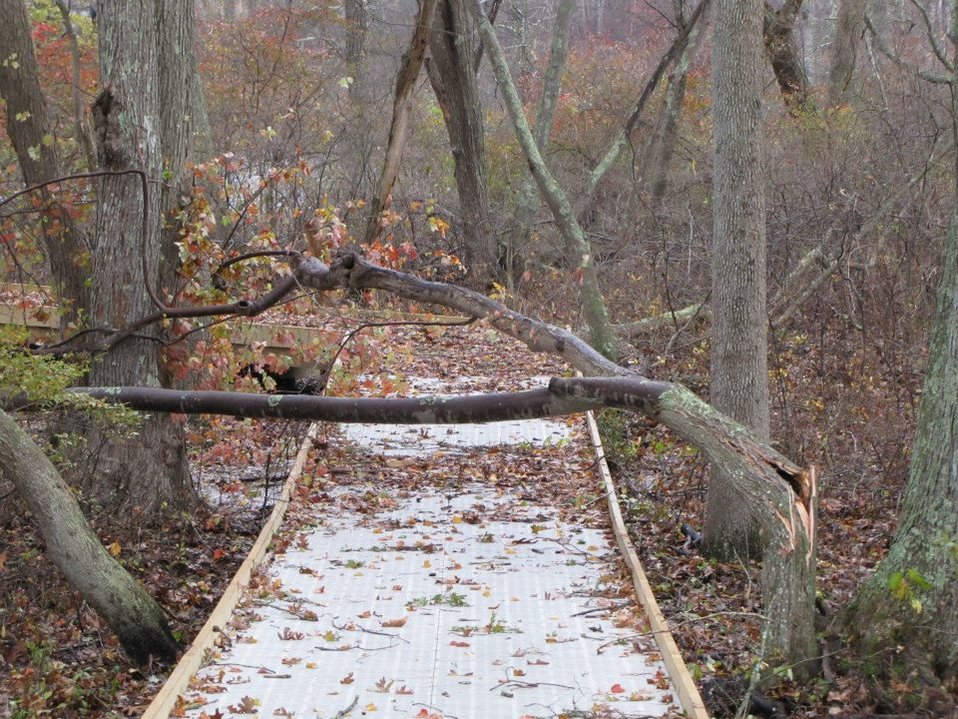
Hurricane damage at Long Island National Wildlife Refuge Complex (NY)

Felled tree crossing a trail at the Wertheim Unit.